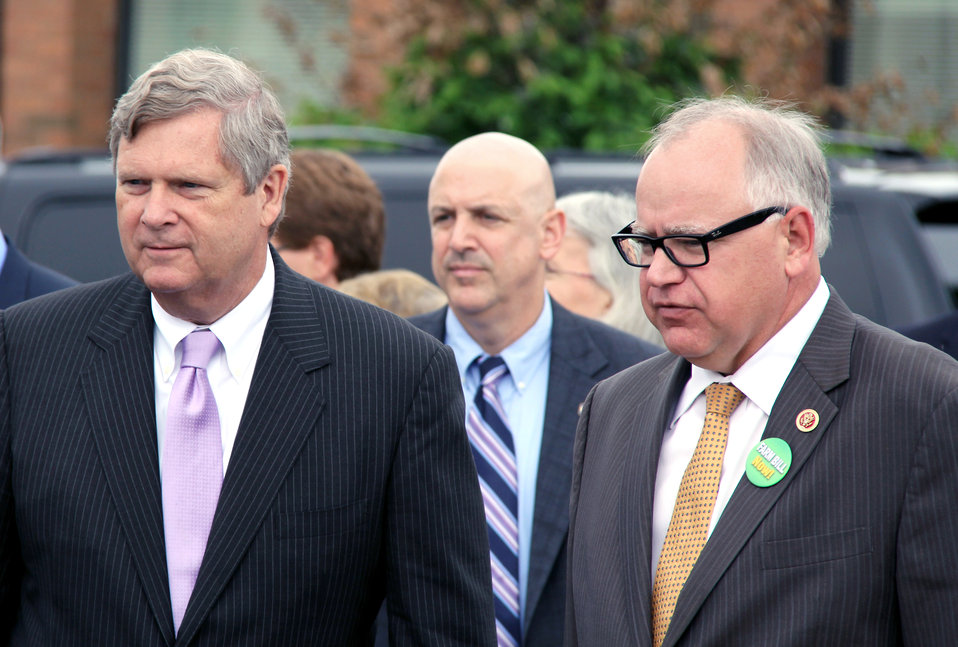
Agriculture Secretary Tom Vilsack and U.S. Congressman Tim Walz (MN) arrive for the launch of the Minnesota Agricultural Water Quality Certification program at St. Paul University, St. Paul, MN on Monday, Jun. 10, 2013. This program is the first of its kind in the nation and is the product of a state-federal Memorandum of Understanding (MOU) signed by Minnesota Governor Dayton, Agriculture Secretary Vilsack and former Environmental Protection Agency (EPA) Administrator Lisa Jackson in January 2012.